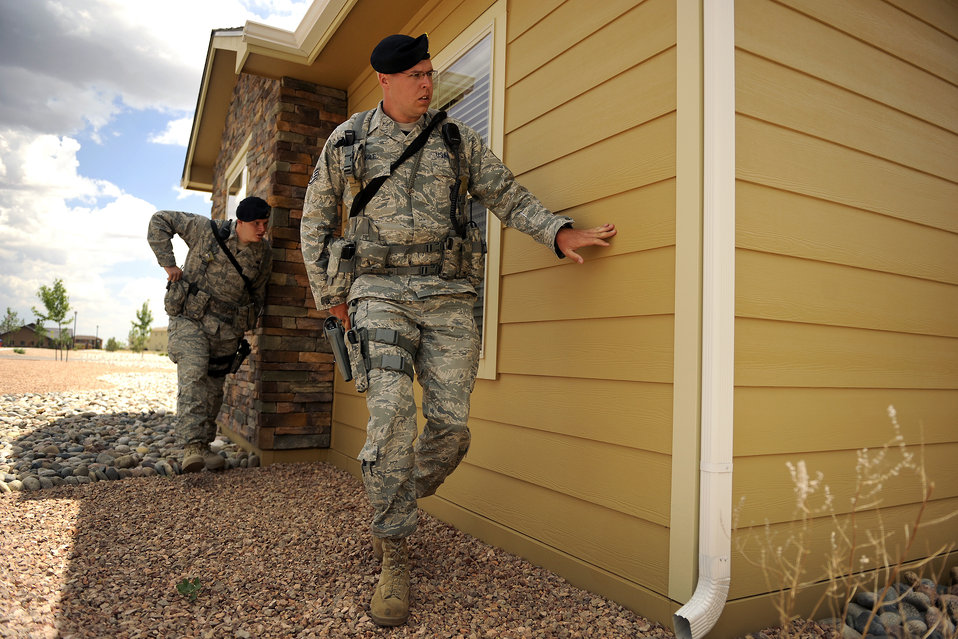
Schriever SFS training

Staff Sgts. Garrett Engle and Nathan Pritz arrive in base housing to respond to a report of domestic violence during an exercise June 15, 2011, at Schriever Air Force Base, Colo. Sergeants Engle and Pritz are members of the 50th Security Forces Squadron.